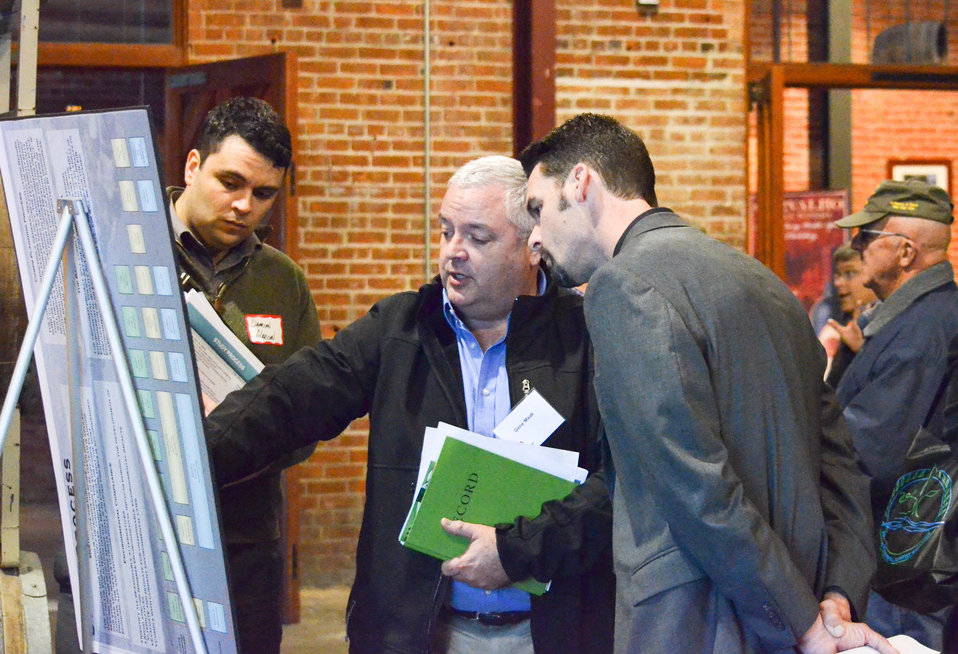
Corps discusses Delta study at public scoping meetings

Gene Maak (center), an engineering technical lead with the U.S. Army Corps of Engineers Sacramento District, shows two attendees the area in the Sacramento-San Joaquin Delta the Corps will study as part of the Delta Islands and Levees Feasibility Study during a public scoping meeting Feb. 19, 2013, in Clarksburg, Calif. An additional meeting was held Feb. 20 in Sacramento. The public scoping meetings are the first step in the planning process for the study, which will determine potential Corps participation in flood risk management and ecosystem restoration projects in the Delta.